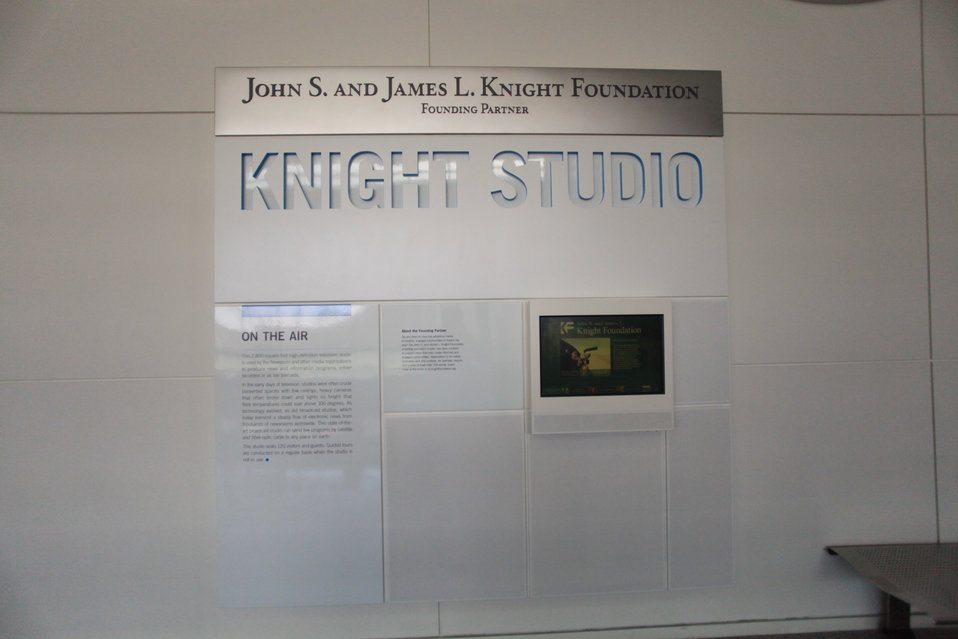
Knight Studio at the Newseum

February 1, 2012.